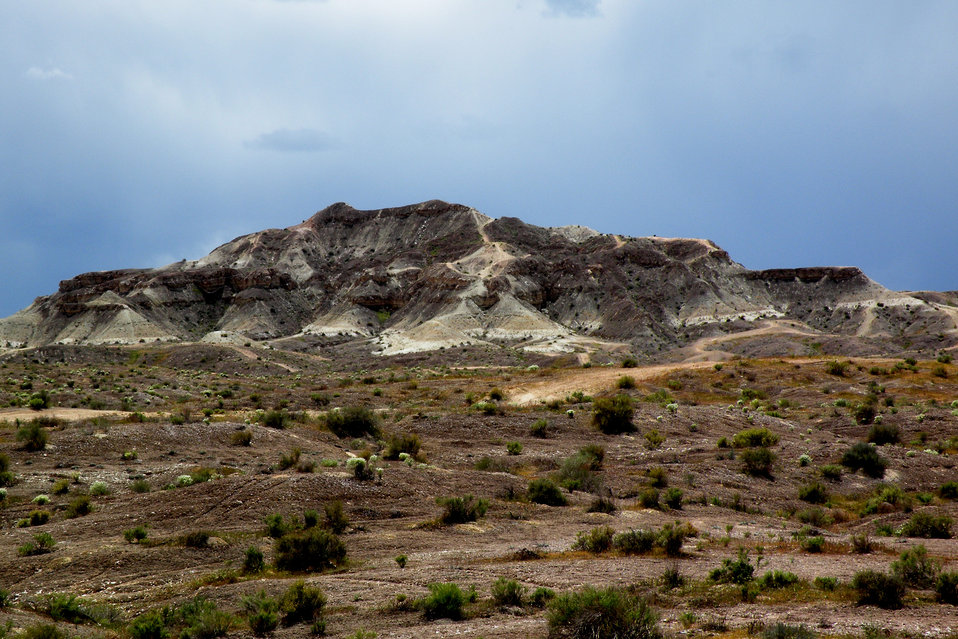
Siler pincushion cactus Habitat (Pediocactus sileri)

White Dome in Washington County, UT, provides habitat for the threatened Siler Pincushion cactus as well as the endangered dwarf bear poppy (Arctomecon humilis)